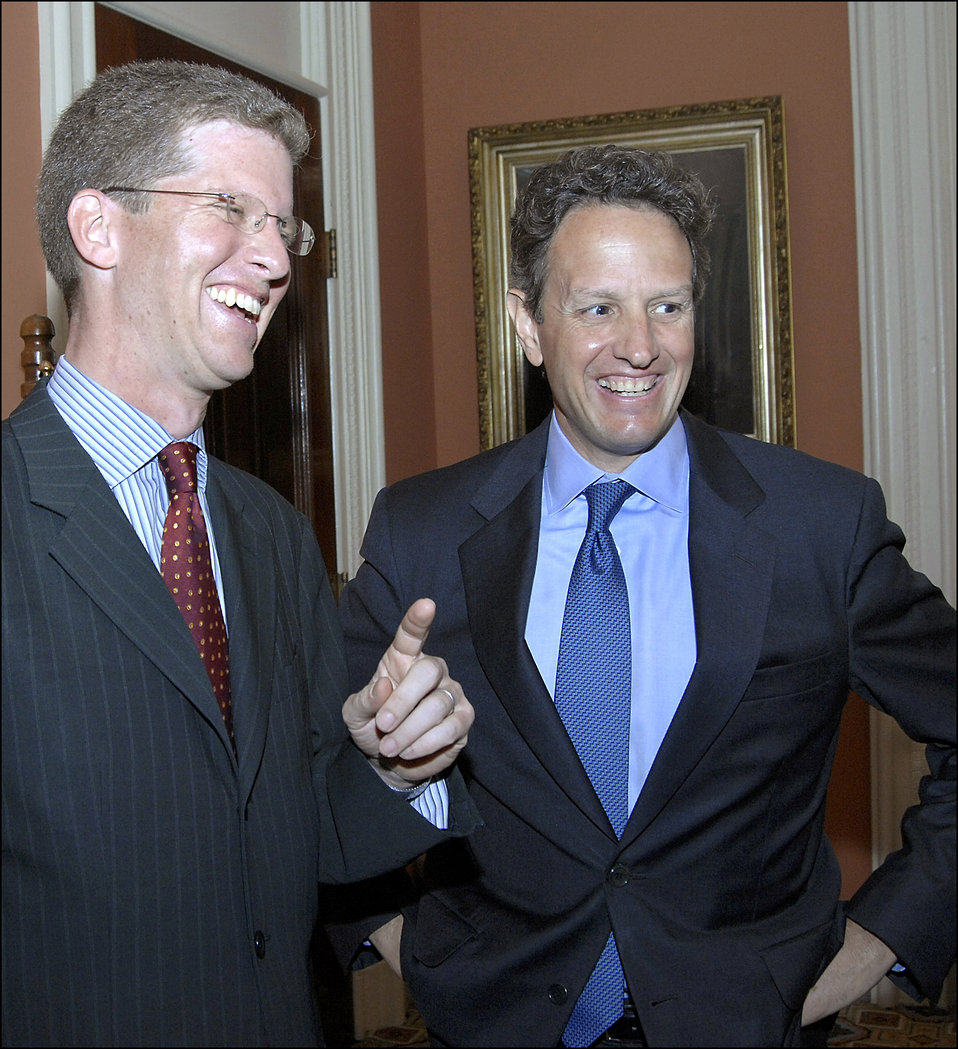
Conference on the Future of Housing Finance, 08/17/2010

HUD Secretary Shaun Donovan and Treasury Secretary Tim Geithner before the start of the conference. They were joined senior White House, HUD, and Treasury officials, as well as a wide cross-section of stakeholders, including citizen and consumer advocacy groups, economists, investors, lenders, market researchers, mortgage servicers, and many others.